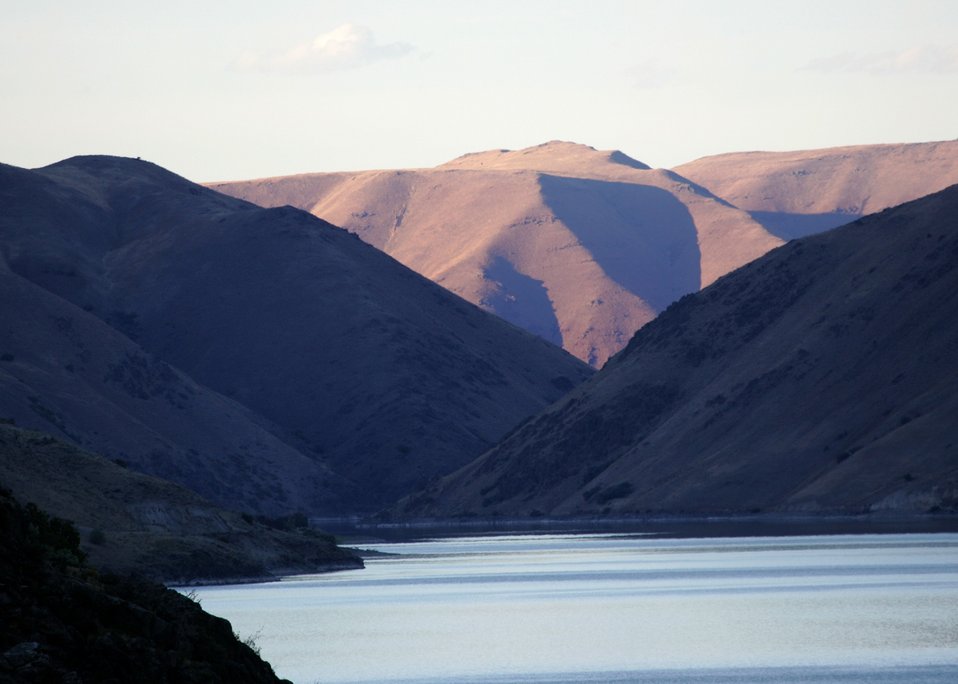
Snake River Backcountry Bywaty.